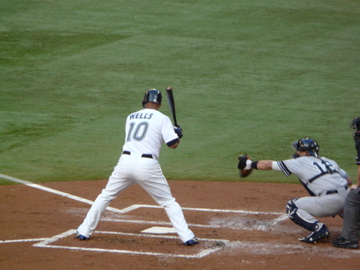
Vernon Wells
19:20, 6 September 2008 . . DinoZon . . 360×270 (49 KB)